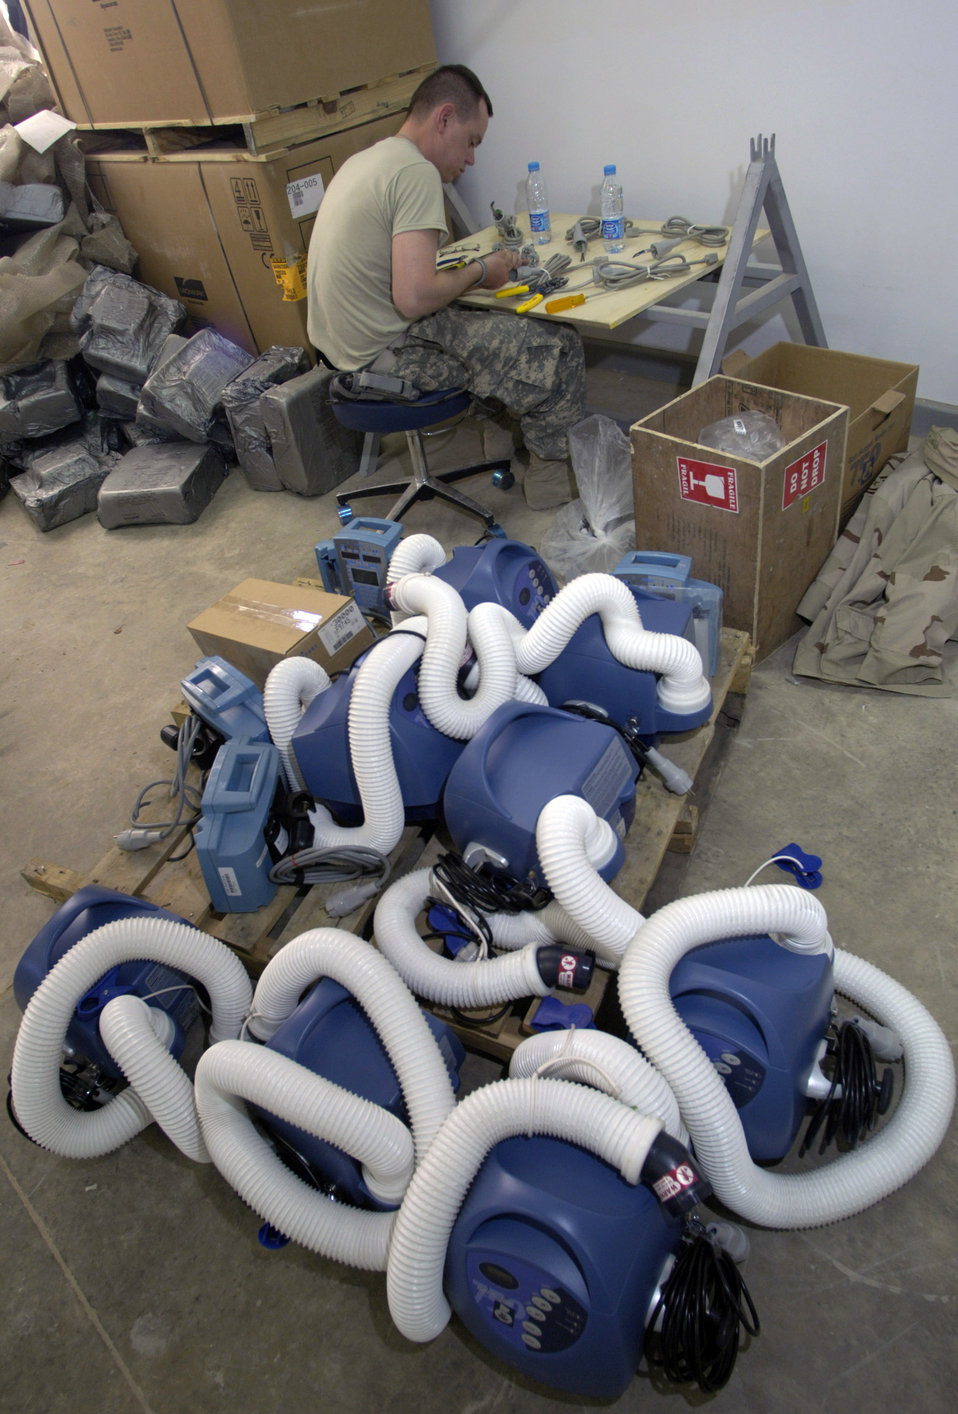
Airmen equip Afghan hospital with supplies, knowledge

Tech. Sgt. Curtis Miller assembles medical equipment in a warehouse Aug 17. Once assembled, the equipment will be transported across the street, to the newly built $6.5 million, 50-bed hospital on the Afghan National Army's Hero Camp, located just outside Kandahar Airfield in southern Afghanistan. Sergeant Miller is a medical logistics technician and Afghan National Army mentor. He is assigned to the Combined Security Transition Command-Afghanistan headquartered on Camp Eggers, Kabul, Afghanistan.